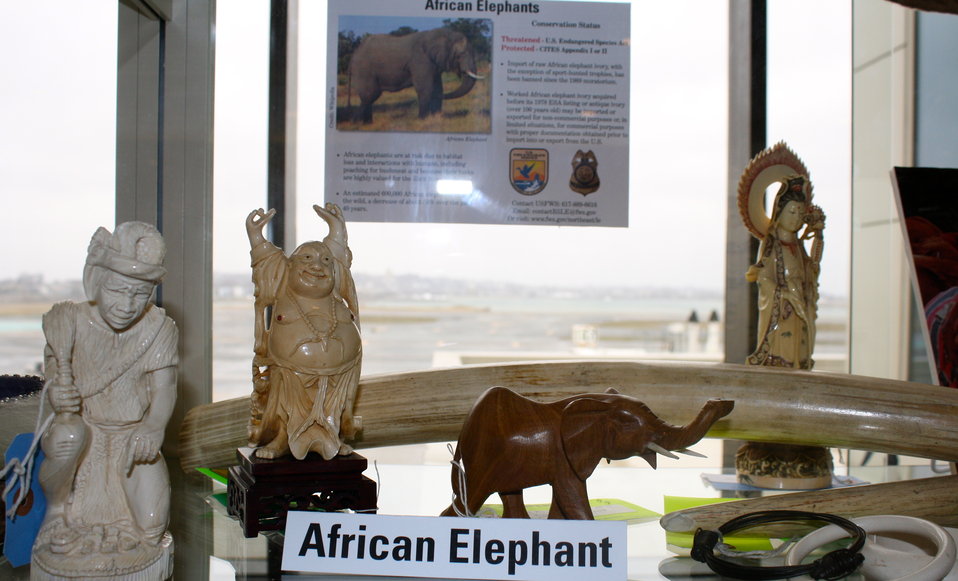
Elephant Ivory Carvings